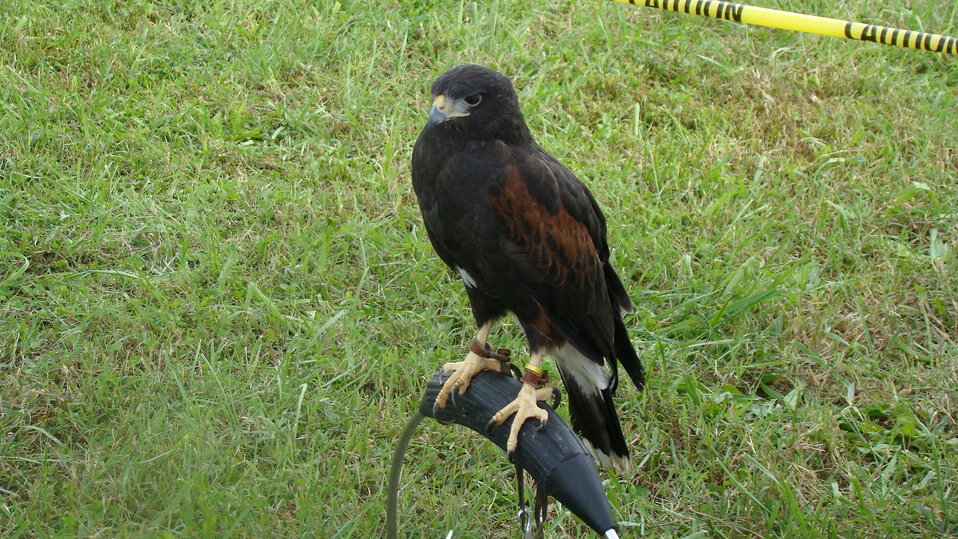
Rappahannock River Valley NWR 15th Anniversary

The Raptor Conservancy exhibit.